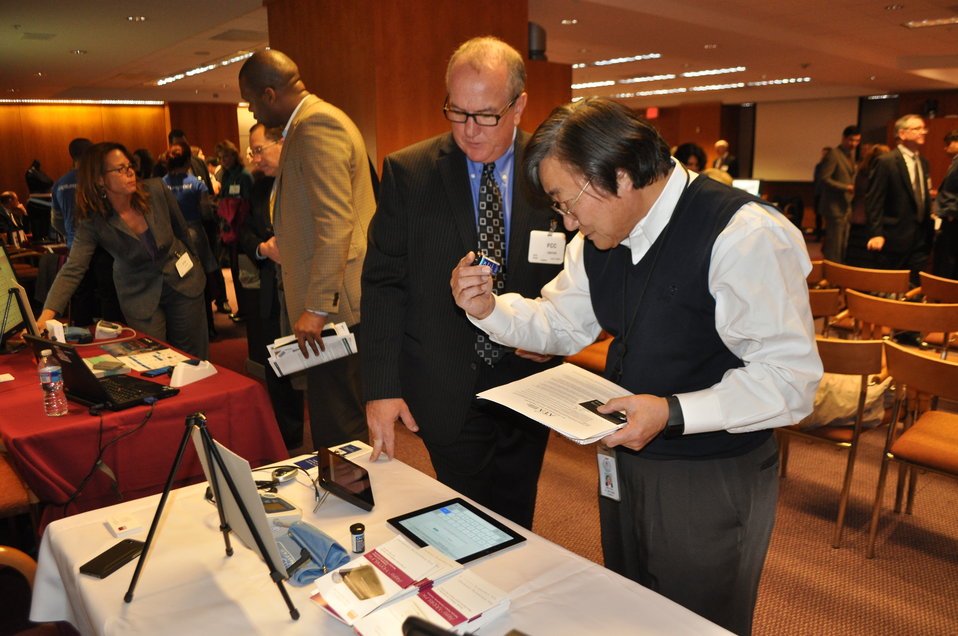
12.6.13 mHealth Innovation Expo

FCC mHealth Innovation Expo.